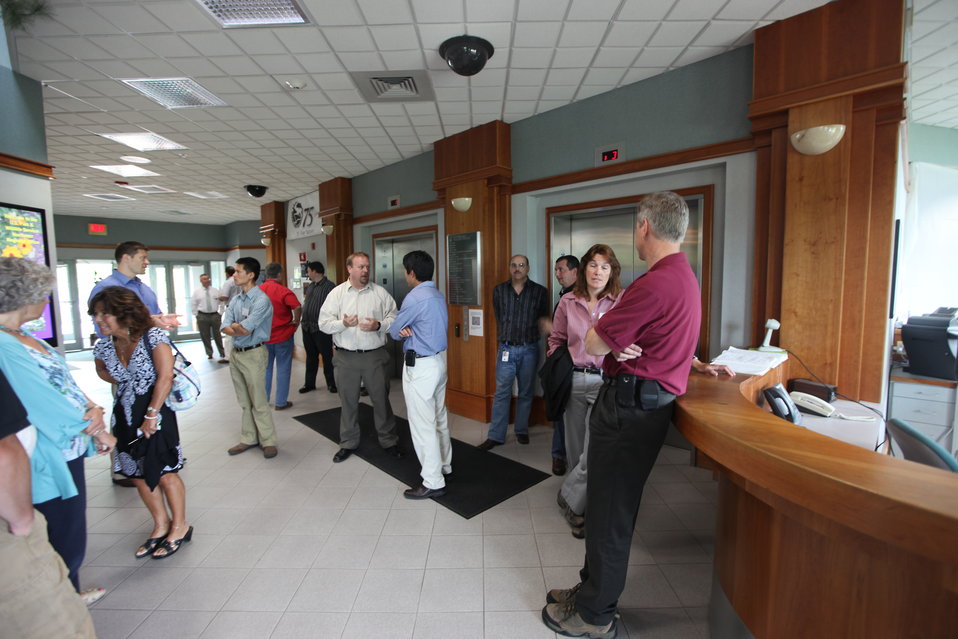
Northeast Region Employee Appreciation Awards

Before the awards ceremony, employees from the region catch up with each other.